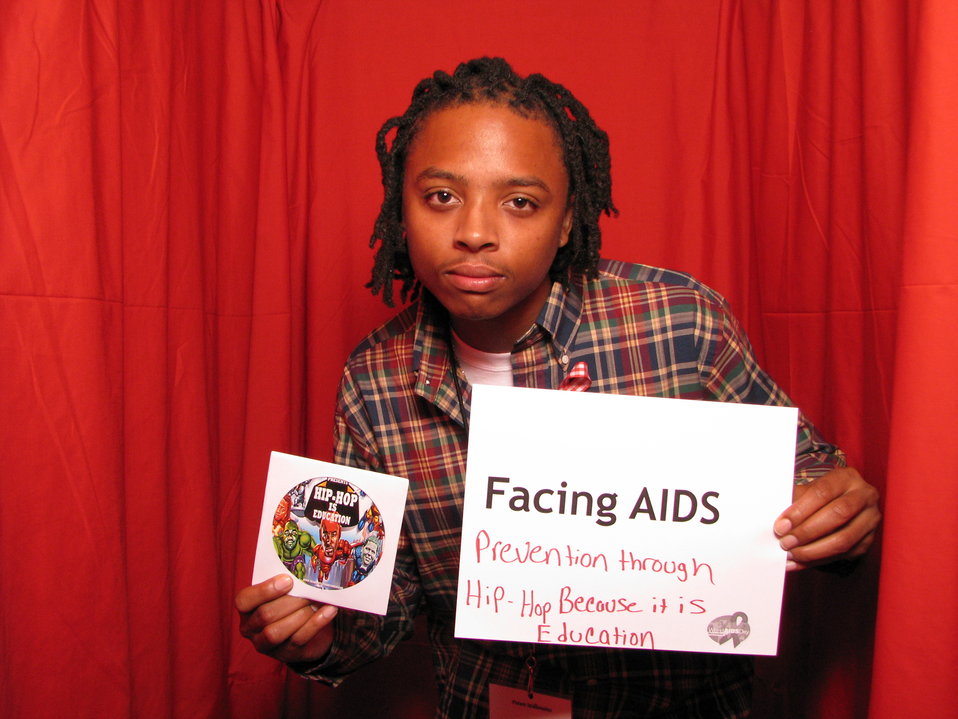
FACING AIDS prevention through hip-hop because it is education.

From the AIDS.gov photo booth at the U.S. Conference on AIDS, September 2010 (Orlando, FL).